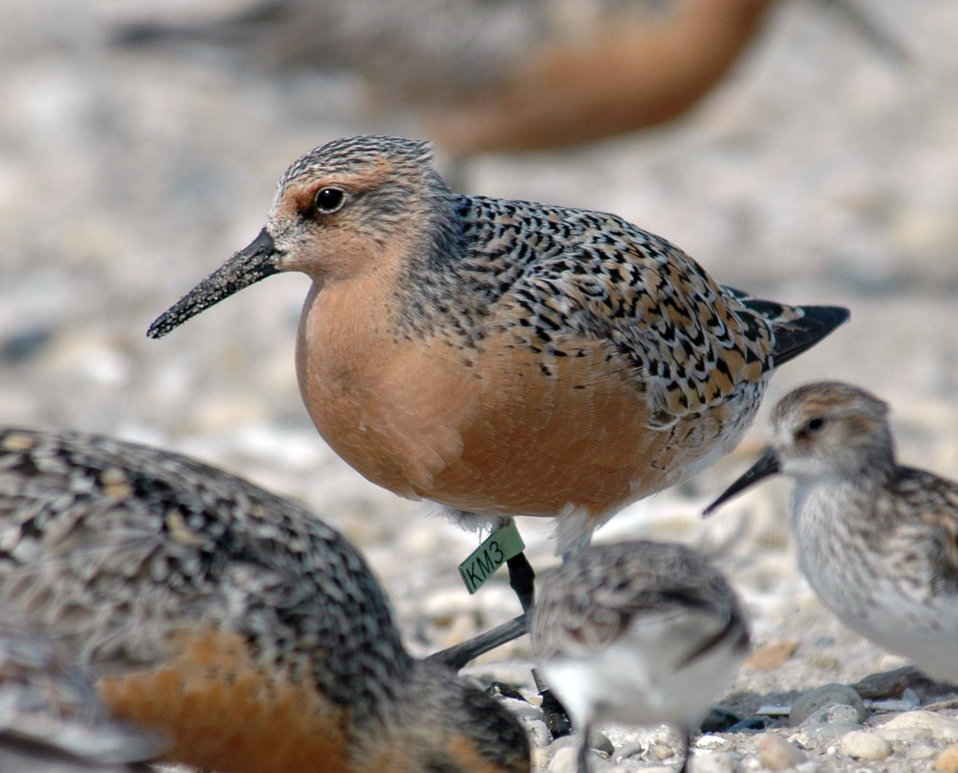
Red Knot

The red knot is just one of the species at Blackwater National Wildlife Refuge that could be affected by climate change and sea level rise.